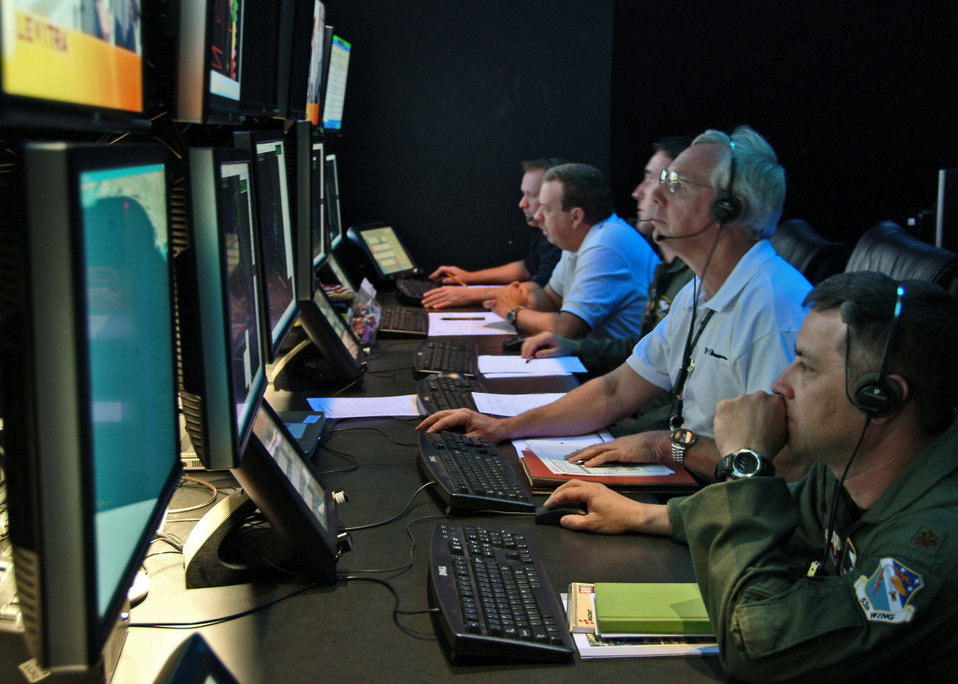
Check your 'six'

Analysts and engineers monitor the B-1B tail warning function test Feb. 25 at the Central Control Facility at Eglin Air Force Base, Fla. The tail warning function is a radar that faces the rear of B-1B to detect incoming missiles or aircraft. If detected the system can deploy defensive countermeasures.